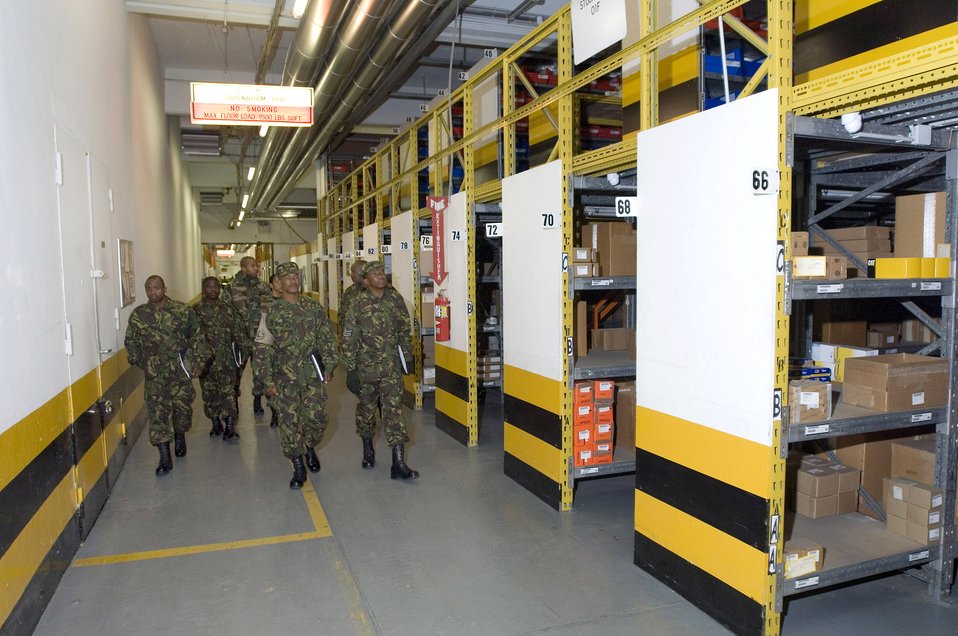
Botswana Defense Force visit

RAMSTEIN AIR BASE, Germany (AFPN) -- Botswana Defense Force personnel tour a 435th Logistics Readiness Squadron warehouse. The visit was part of a Joint Contact Team Program which allowed the visitors to see Air Force management procedures on an active duty installation.